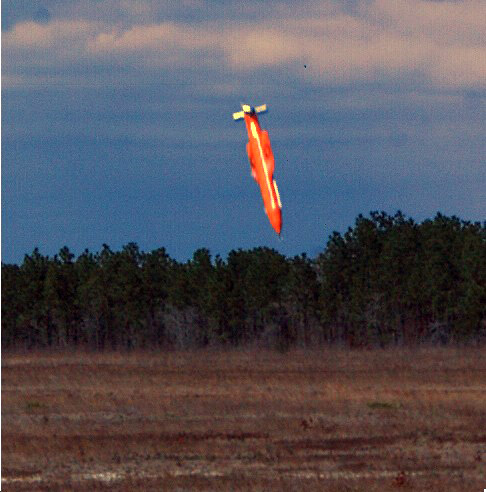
The 'Mother of All Bombs'

The GBU-43/B Massive Ordnance Air Blast bomb prototype is shown moments before impact March 11, 2003. The detonation created a mushroom cloud that could be seen 20 miles away.